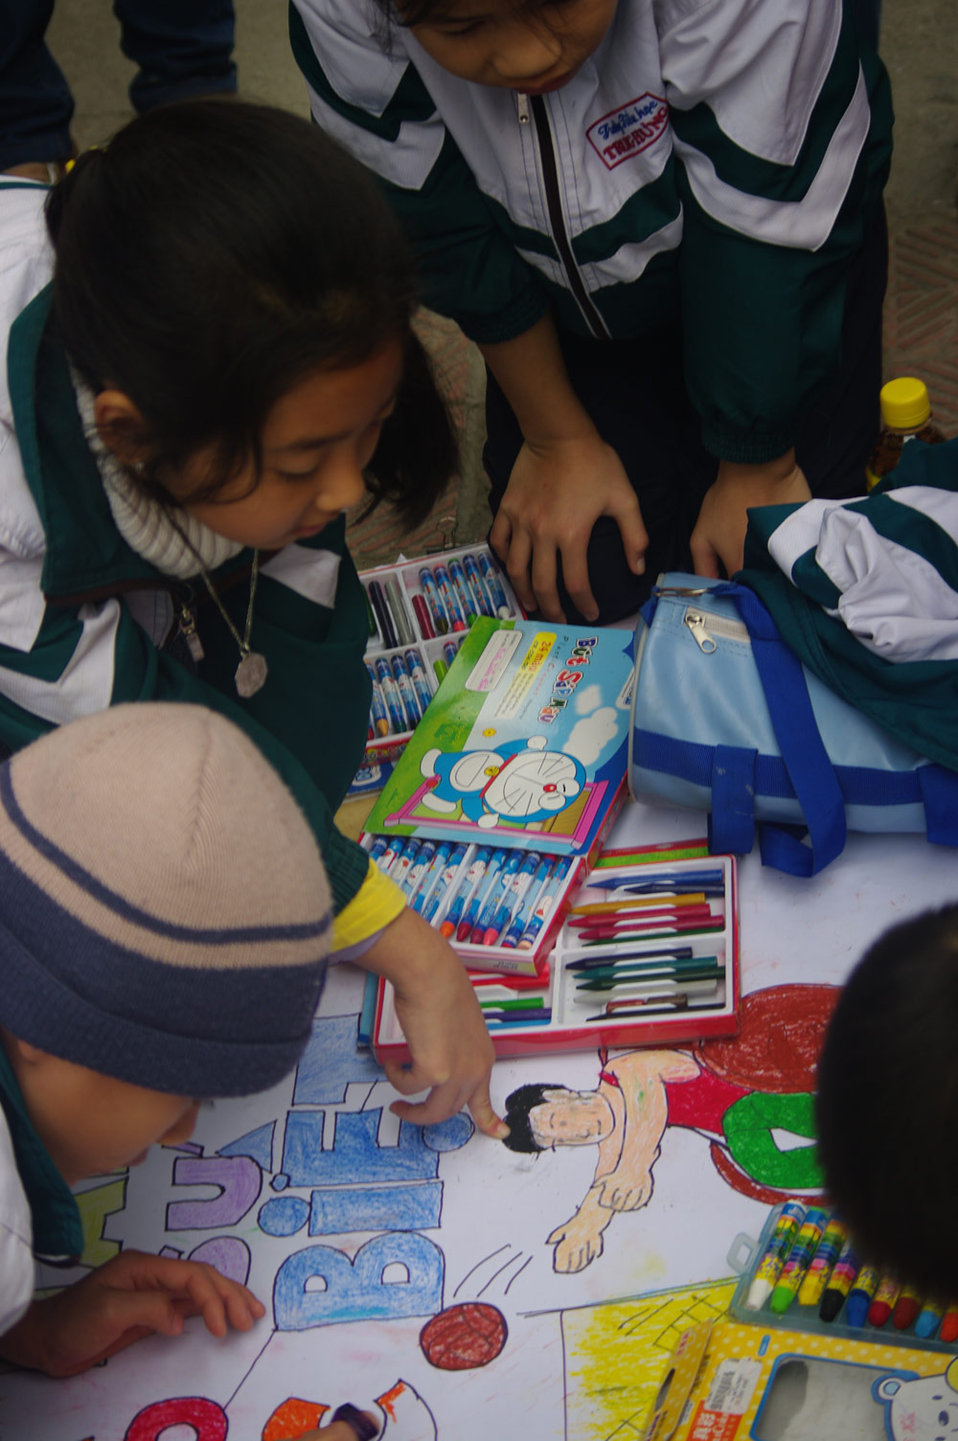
International Day of Persons with Disabilities 2010